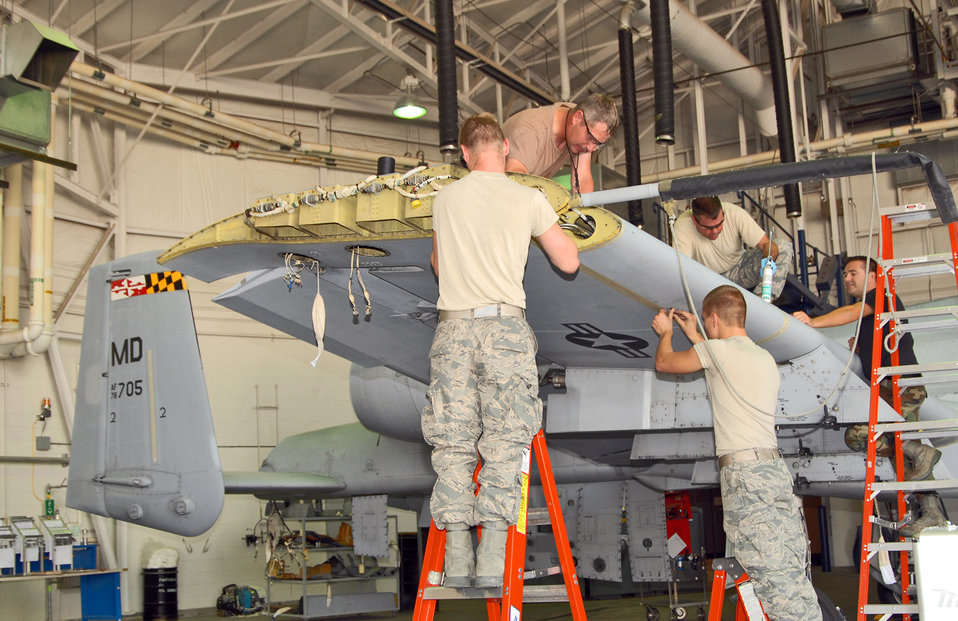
A-10 'assembly-line' maintenance concept

A team of Idaho Air National Guard maintainers from the 124th Wing at Gowen Field in Boise, Idaho reinstall the leading edges on the wing of a Maryland Air National Guard A-10 Thunderbolt II. The aircraft received a new AAR-47 infrared missile warning system as part of the A-10 Consolidated Install Program June 16.